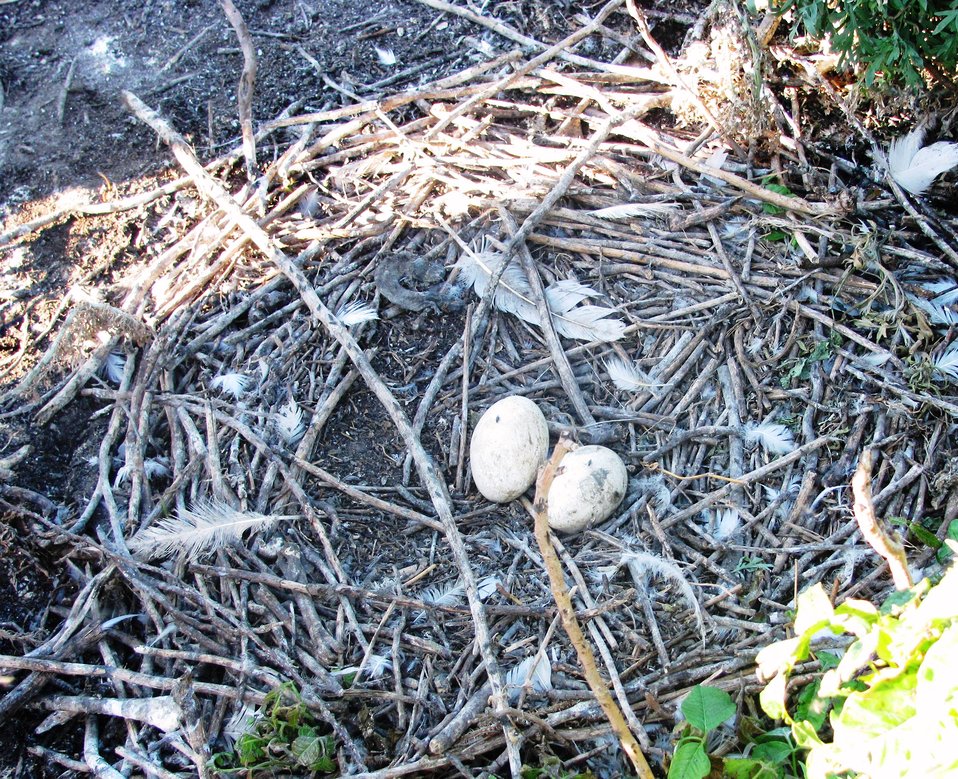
American White Pelican Nest

Shown here is an American White Pelican nest. Pelicans usually lay 2 eggs. A unique characteristic about American White Pelicans is that they build their nests on the ground with sticks.